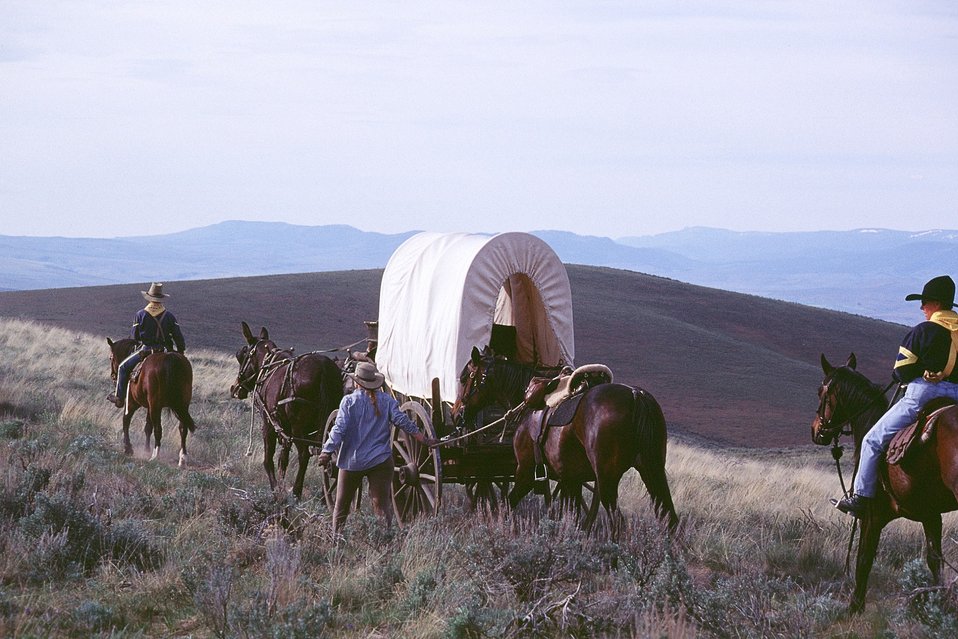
NHOTIC 10th Anniversary, wagon train reenactment. Pioneers, covered wagons, and soldiers on horseback on the Oregon Trail.